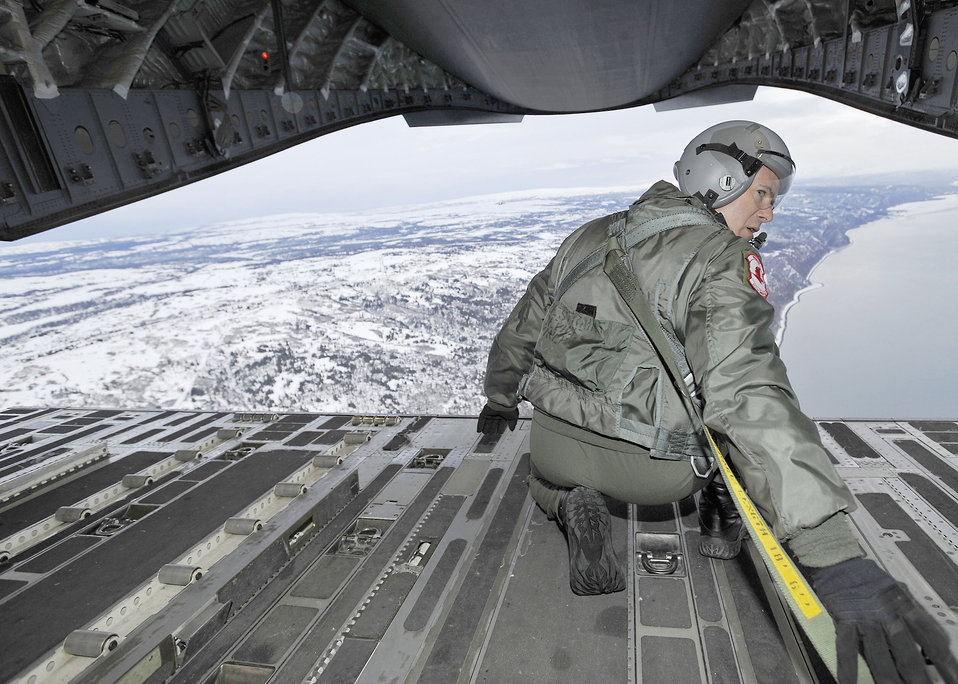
C-17s participate in Pacific Rendezvous

Senior Master Sgt. John Gallo checks the location before dropping cargo over the drop zone near Katchemak Bay, Alaska, Feb. 10, 2010. Sergeant Gallo is assigned to the 517th Airlift Squadron and is participating in Pacific Rendezvous, an exercise exploring C-17 capability in large formations.